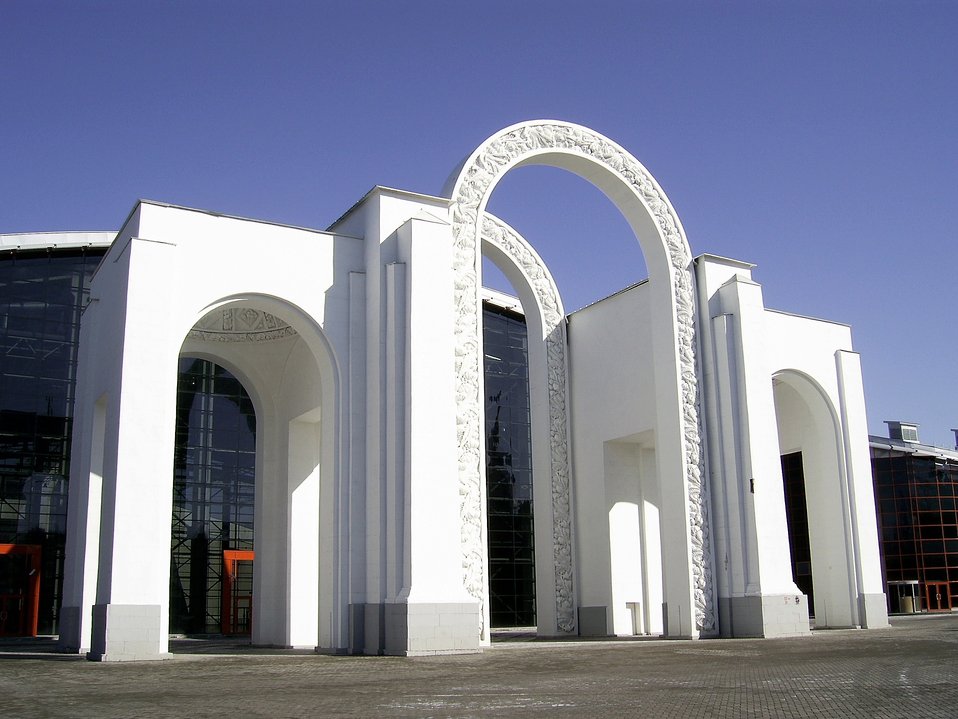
Русский: никогда не перестраивались с 1939 года